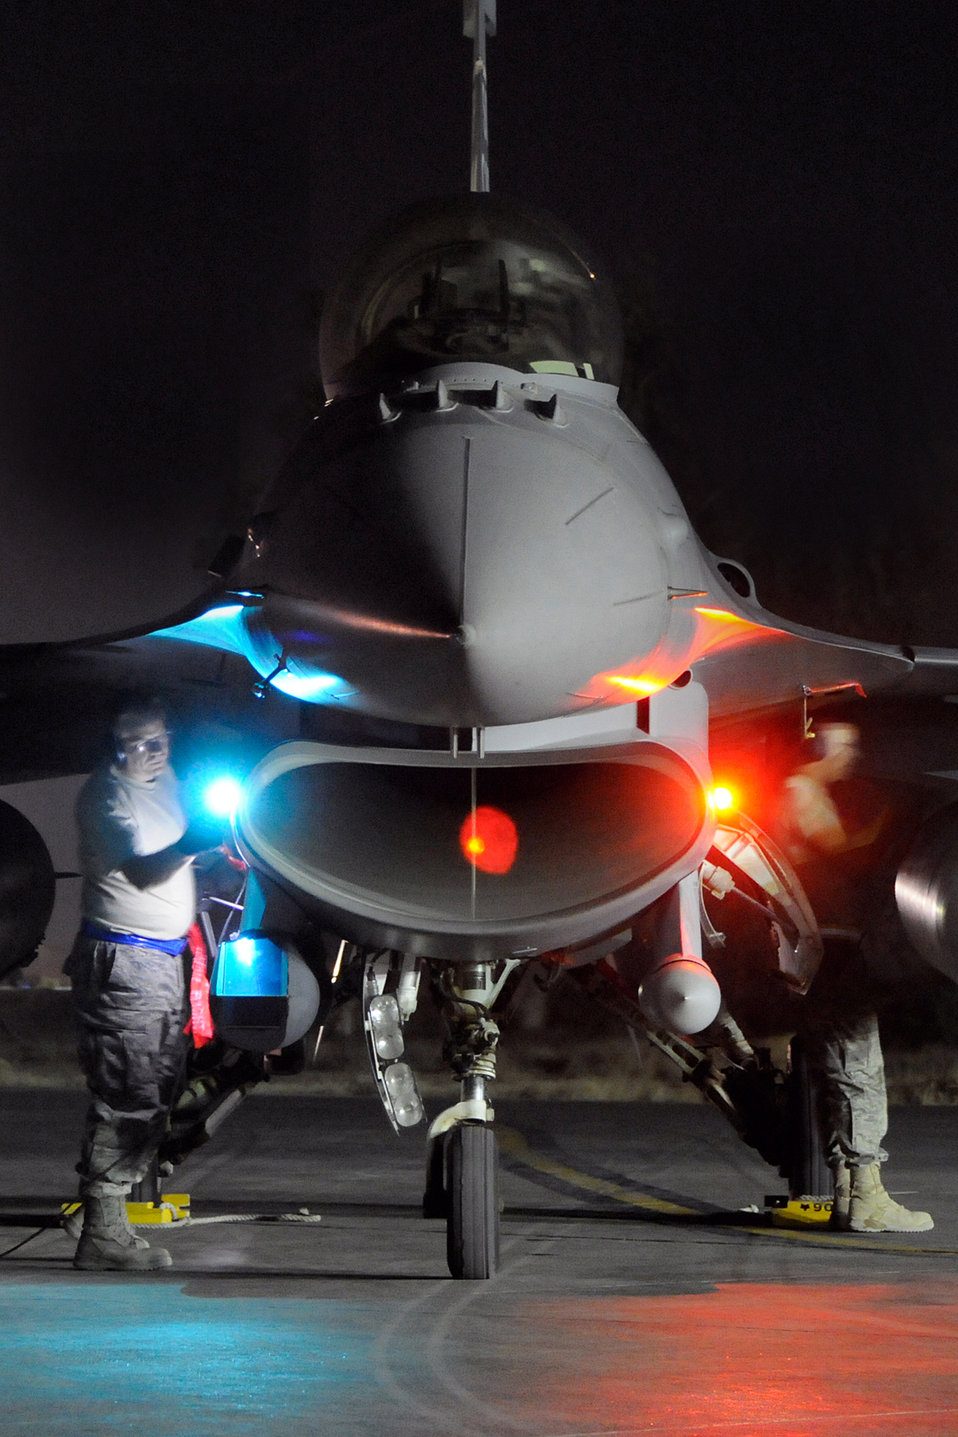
Checking it out

Airmen perform a post flight check on an F-16 Fighting Falcon from a flying mission after its return June 29, 2010, to Joint Base Balad, Iraq. The Airmen are assigned to the 169th Maintenance Group at McEntire Joint National Guard Base, S.C.